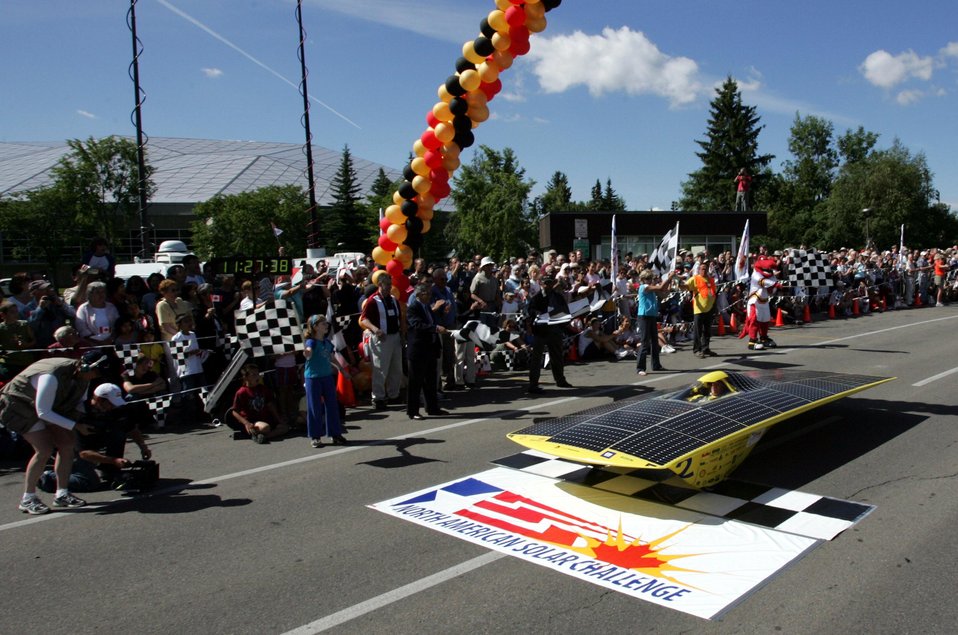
THE UNIVERSITY OF MICHIGAN SOLAR CAR CROSSES THE FINISH LINE AT THE UNIVERSITY OF CALGARY IN CALGARY, ALBERTA, CANADA TO WIN FIRST PLACE DURING THE 2,500 MILE NORTH AMERICAN SOLAR CHALLENGE ON JULY 27, 2005

THE 2005 NORTH AMERICAN SOLAR CHALLENGE (ASC) WAS A CROSS COUNTRY SOLAR RACE THAT WAS HELD JULY 17 TO 27, 2005. THE RACE STARTED IN AUSTIN, TEXAS AND FOLLOWED U.S. ROUTE 75 AND THE TRANS-CANADA HIGHWAY (HWY 1) TO CALGARY, ALBERTA, CANADA. TEAMS FACED VARIED CLIMATES, TOPOGRAPHY AND ROAD CONDITIONS. THE FIRST TIME THE WORLD'S LONGEST SOLAR CAR RACE WENT THROUGH THE U.S. AND CANADA.